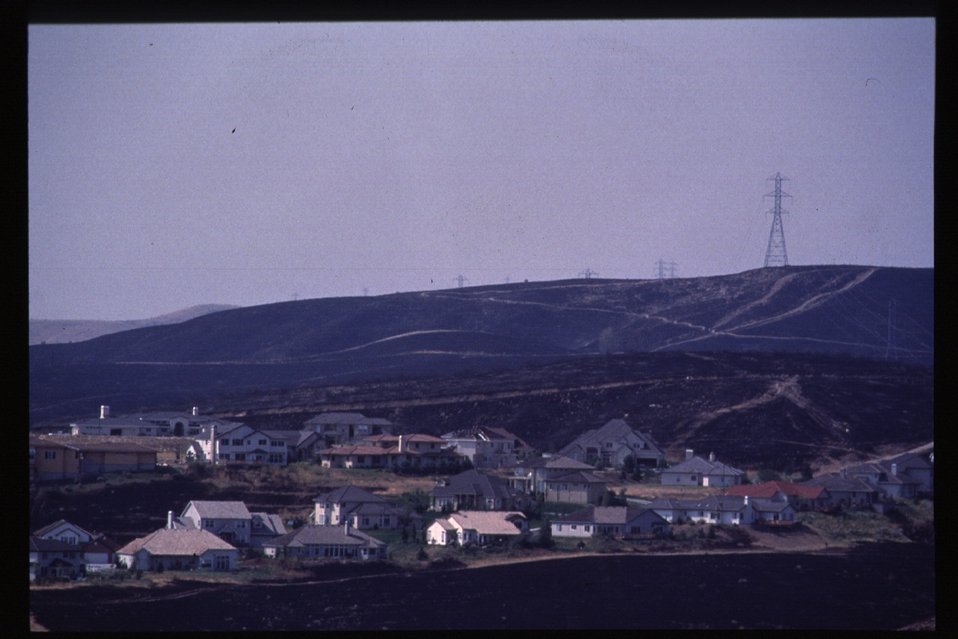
Urban interface Fire Four Rivers Field Office LSRD Lower Snake River District